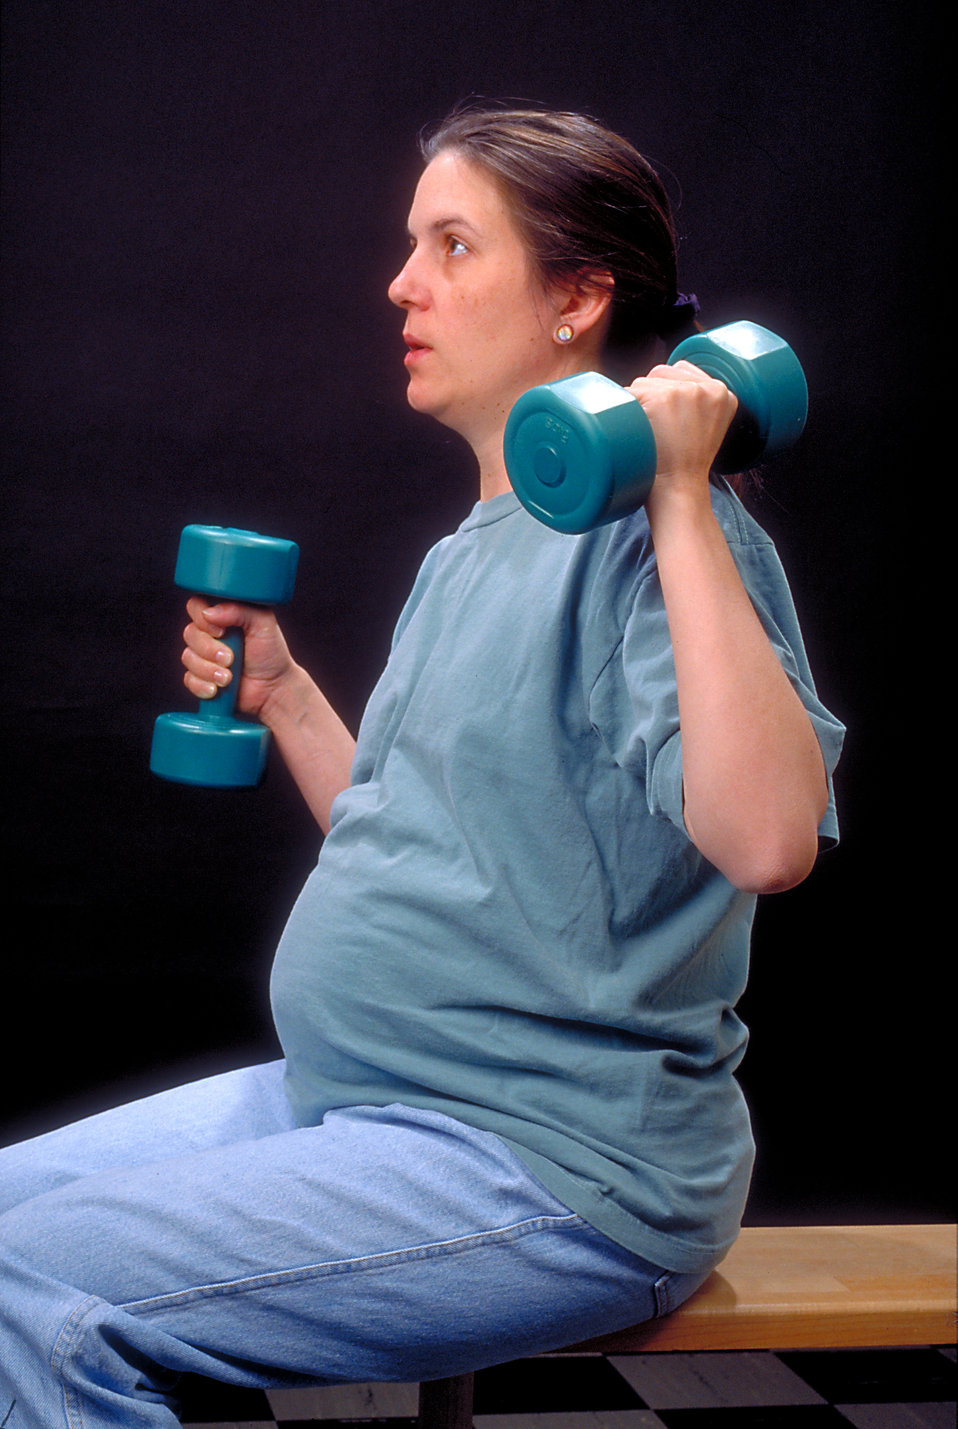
Exercising during pregnancy.